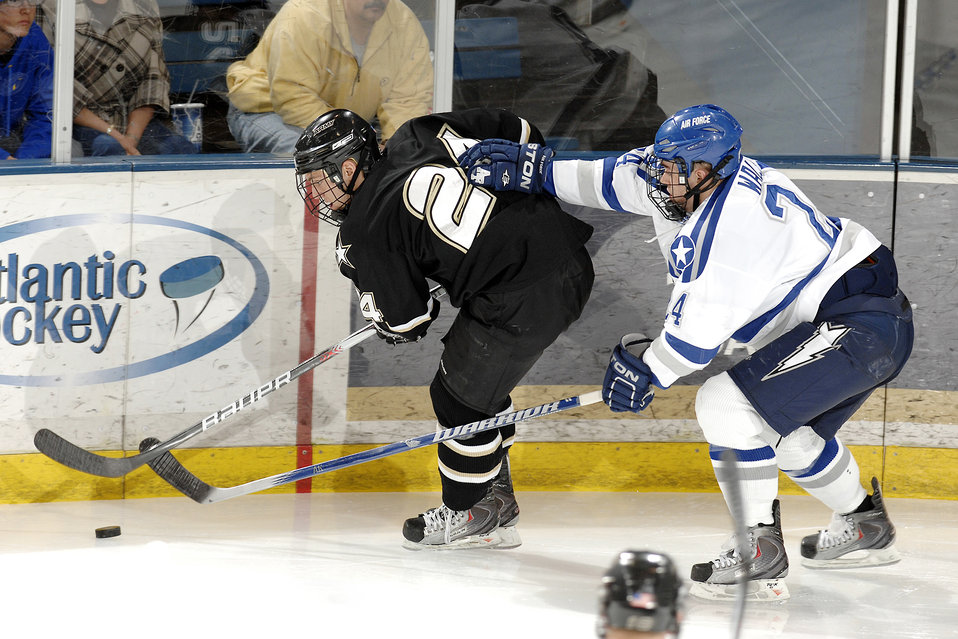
Air Force beats Army Black Knights

Falcon defenseman freshman Mike Walsh battles for control of the puck as Air Force defeated Army 3-0 at the U.S. Air Force Academy's Cadet Ice Arena March 12, 2010. Air Force went on to win the best-of-three series, advancing to the Atlantic Hockey Association Final Four against Sacred Heart March 19 in Rochester, N.Y.